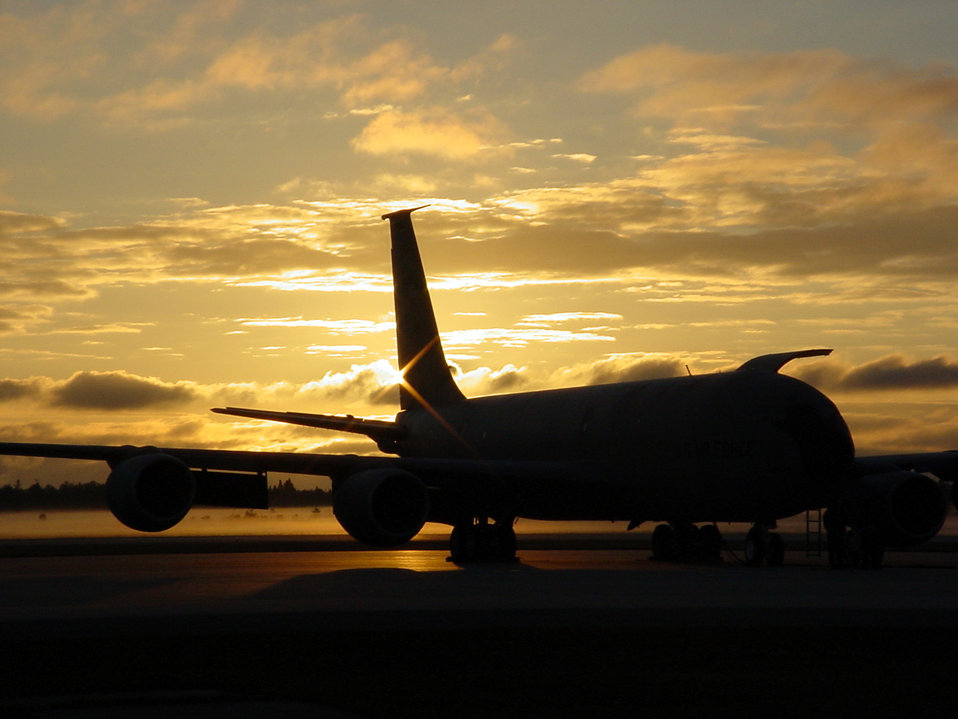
Good morning, sunshine

PHELPS-COLLINS AIR NATONAL GUARD BASE, Mich. -- A KC-135R Stratotanker is silhouetted in the sunrise here recently. The 62nd Airlift Wing of McChord Air Force Base, Wash., and the 319th Air Refueling Wing of Grand Forks AFB, N.D., are participating in Exercise Crisis Look to test the air refueling and airlift capabilities of the units.